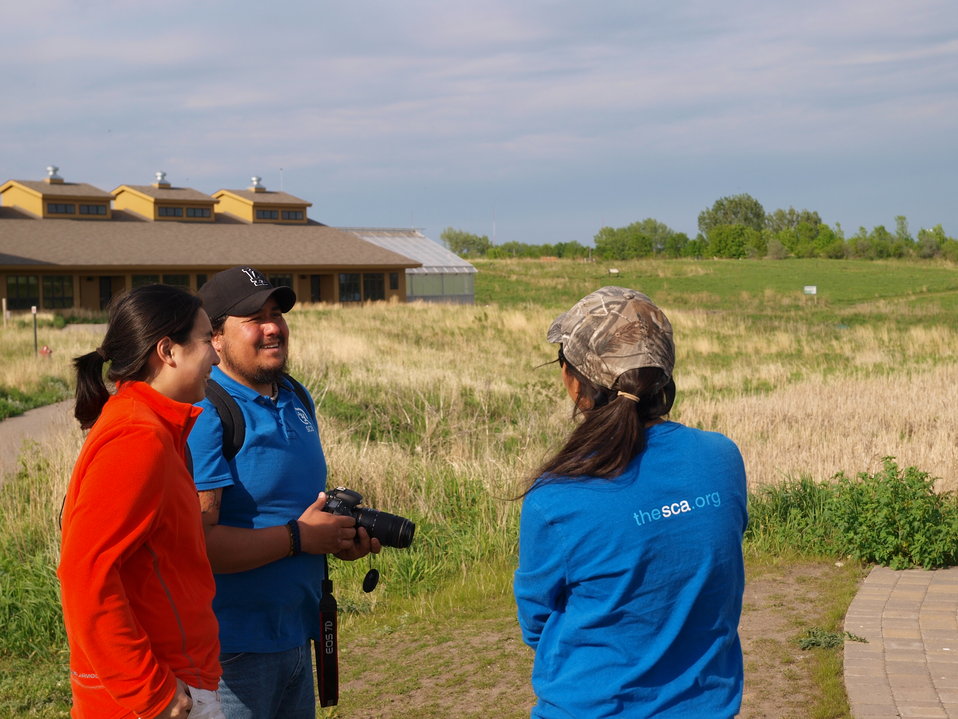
CDIP 2012 Fergus Falls

Matt, Helen, and Mercades, reuniting.